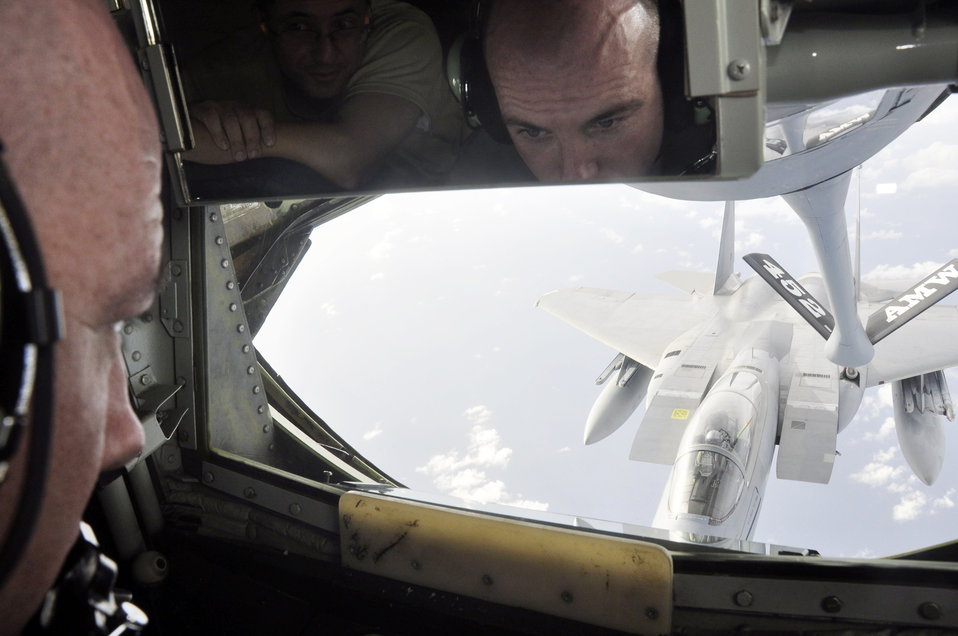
Easy does it

Senior Master Sgt. Ray Lewis maneuvers the boom to refuel a Hawaii Air National Guard F-15 Eagle over the Hawaiian Islands Nov. 7, 2009. The refueling was part of an Employer Support Flight at Hickam Air Force Base, Hawaii, to help employers better understand what their employees do as Air Force Reservists. Sergeant Lewis is a KC-135 Stratotanker boom operator from McConnell AFB, Kan.